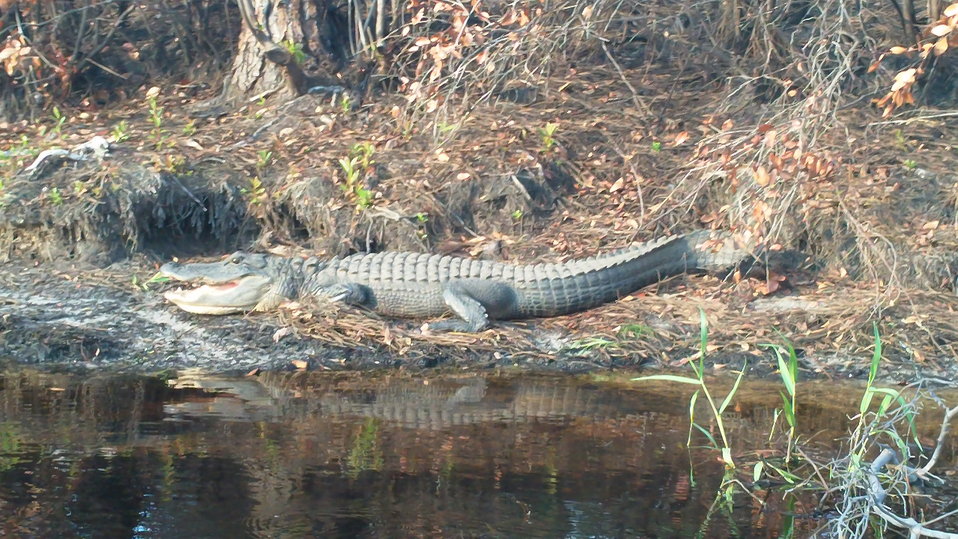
alligator, Okefenokee National Wildlife Refuge, GA

Photo: Ben Weiss, USFWS
2011 Wilderness Fellow